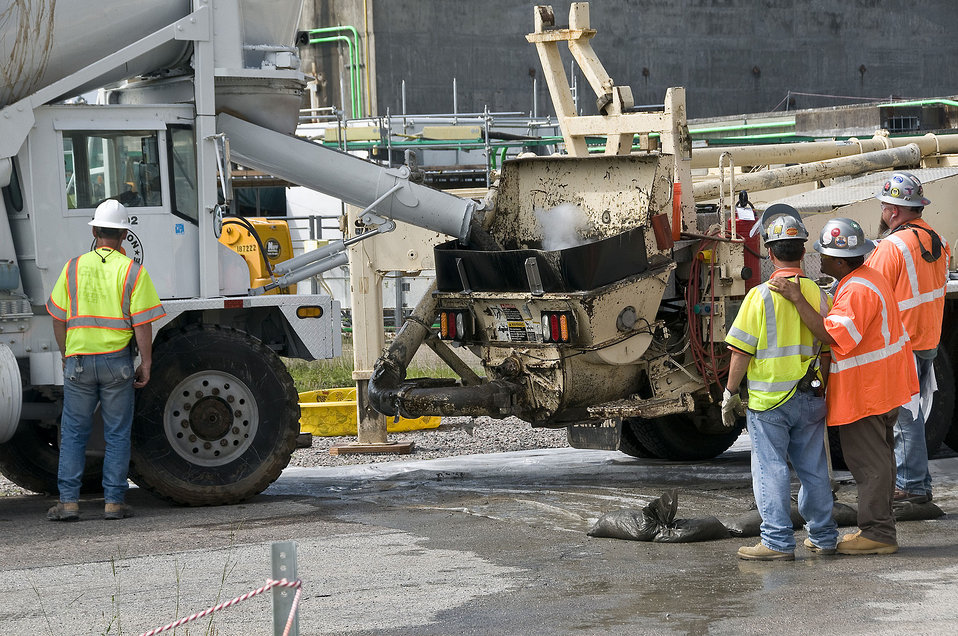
P Area grouting

Grout is a cement-like mixture used in decommissioning reactors.